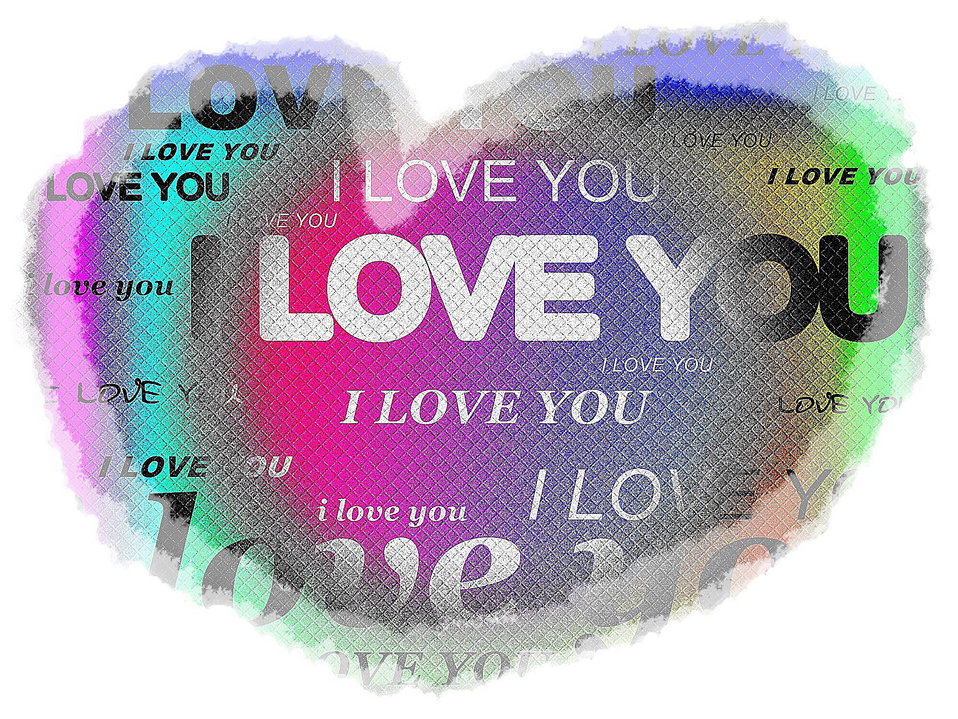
Background 274

Background.